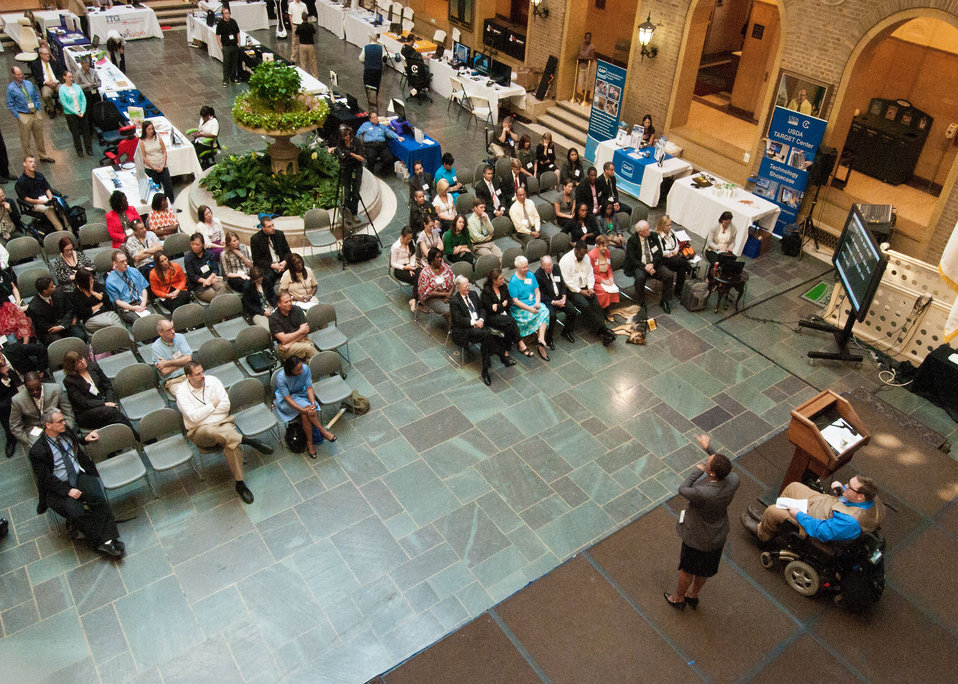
Founder of Federal Employees with Disabilities (FEDS) Jason Olsen speaks at the U.S. Department of Agriculture (USDA) Departmental Management (DM) Target Center 20th Anniversary at USDA in Washington, D.C. on Thursday, Sept. 13, 2012. FEDs is a not-for-profit organization dedicated to ensuring that the rights, privileges, benefits and opportunities for individuals employed by the Federal government are equal to those of their Federal sector peers. The USDA Target Center has provides Assistive Technology to employees with disabilities. The Center has assisted thousands of individuals with disabilities to further contribute to the mission of USDA.